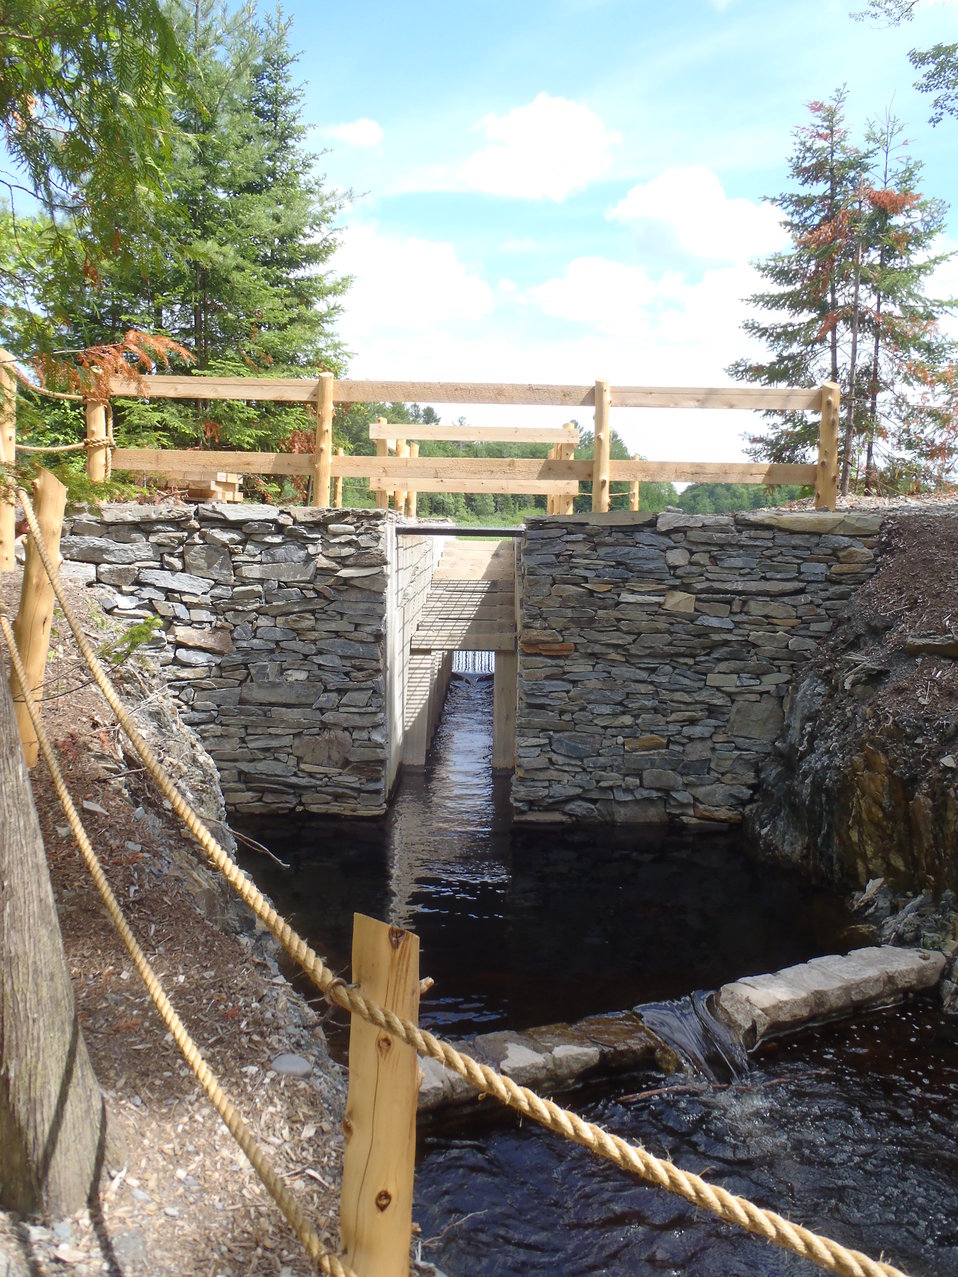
Fish ladder at a park in ME 1